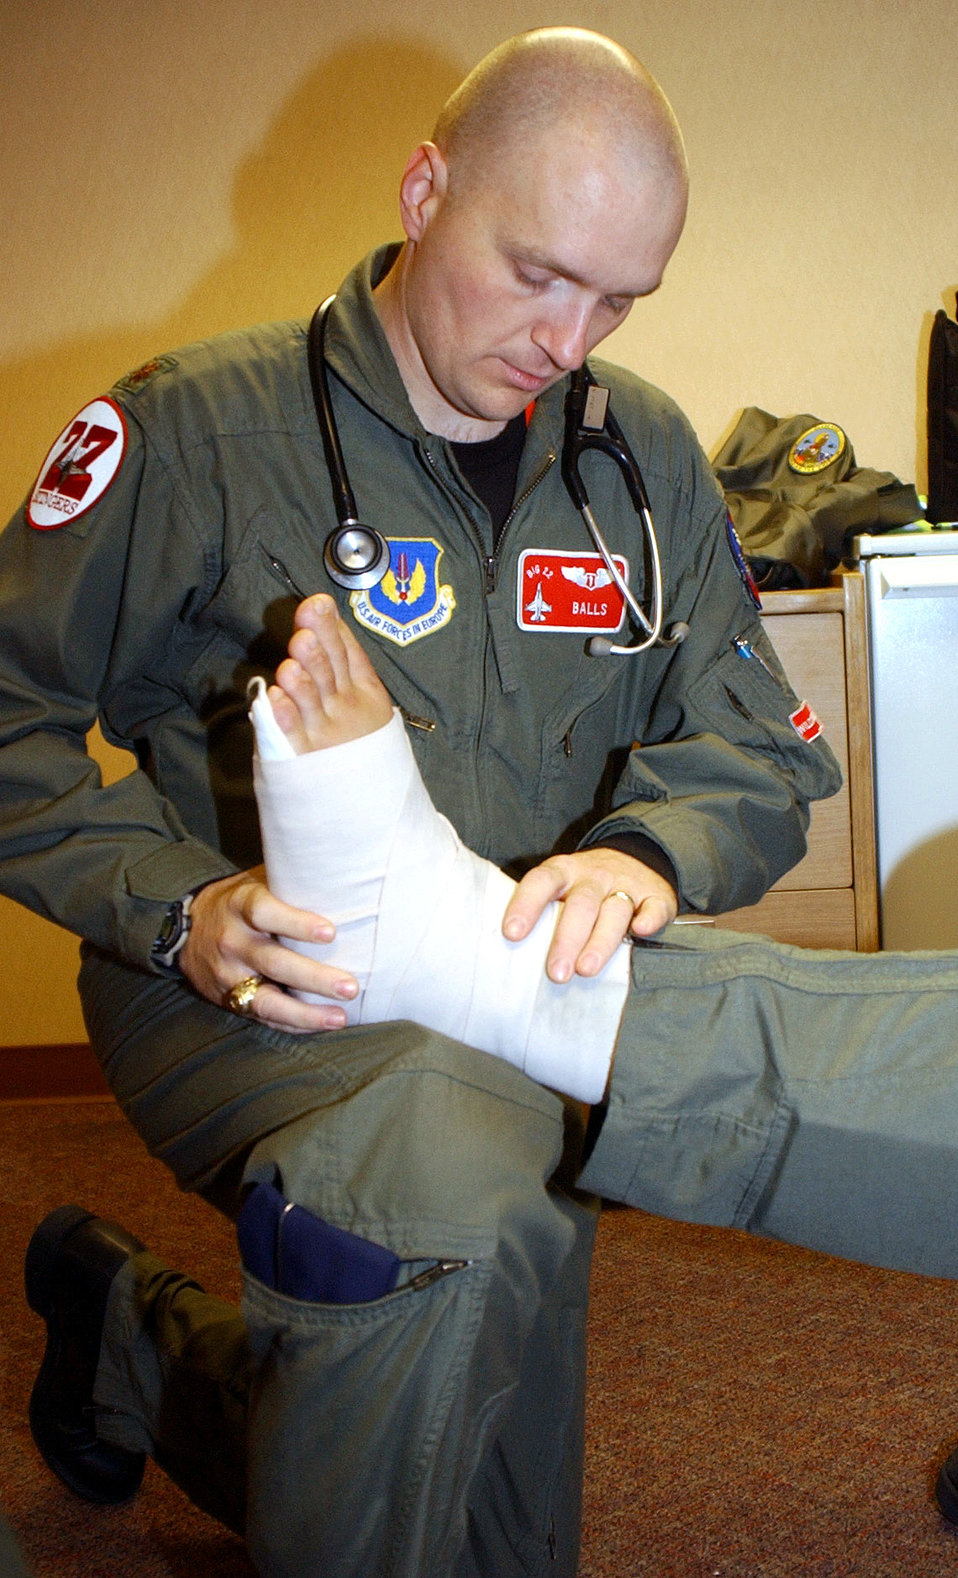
Cope Thunder

EIELSON AIR FORCE BASE, Alaska -- Maj. (Dr.) David Cotton, the Cope Thunder 6-01 flight surgeon, examines a patient's ankle. The doctor is on temporary duty here from 52nd Medical Group from Spangdahlem Air Base, Germany. The two-week Alaskan exercise, Pacific Air Forces' largest air combat training exercise, involves more than 1,000 active-duty and Air National Guard Airmen and 87 aircraft.